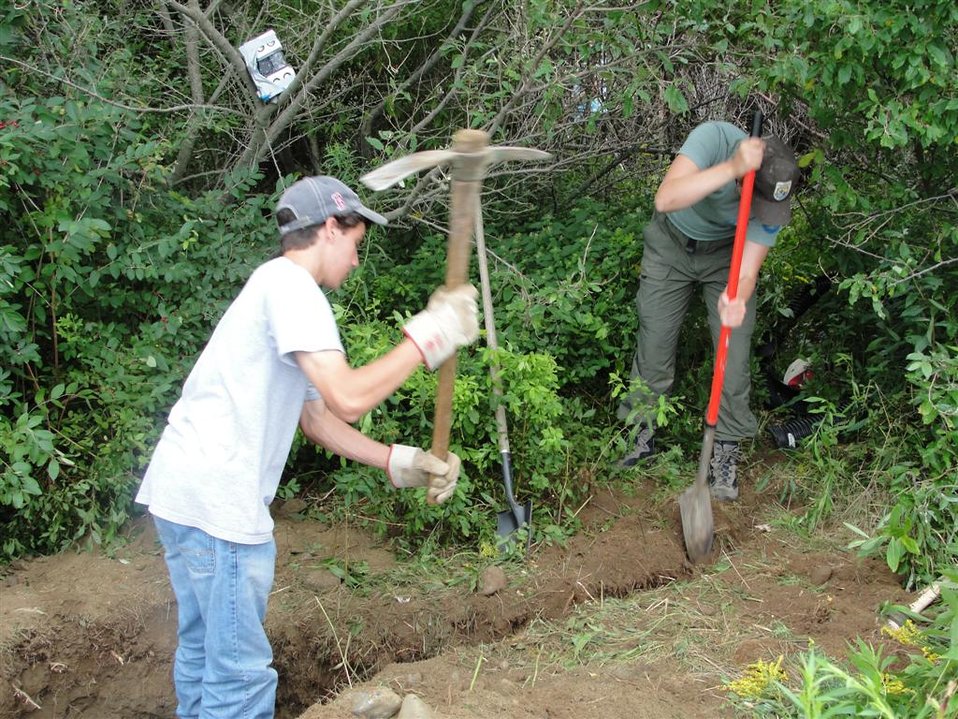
Restoring homes for New England cottontails

Constructing burrows for New England cottontails to use at Libby Field in Maine.